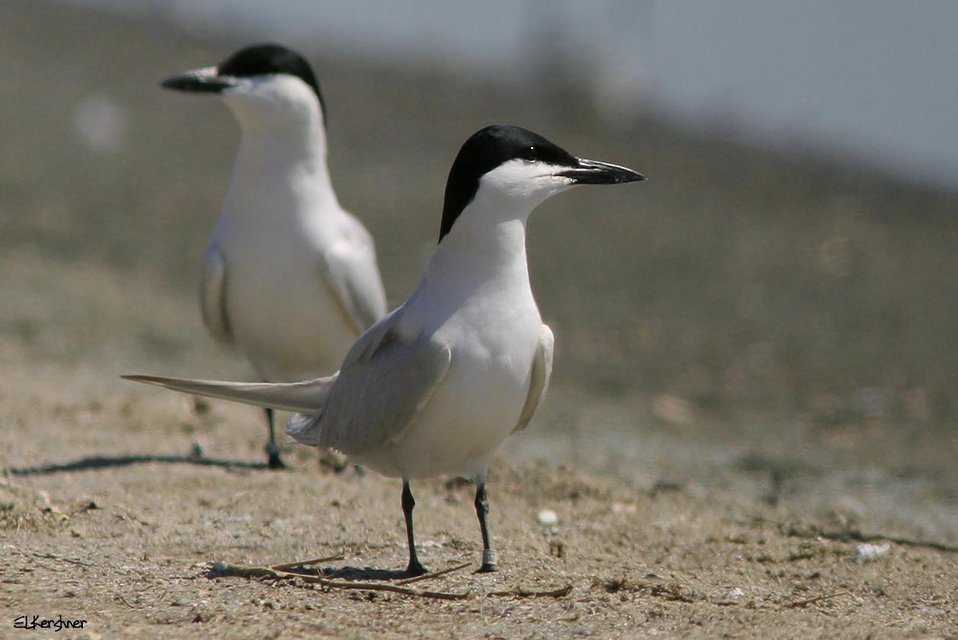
van Rossem's gull-billed tern

These van Rossem's gull-billed terns were photographed at the San Diego National Wildlife Refuge located in southern California.

They are a medium-sized migratory seabird that feed on a variety of small prey items, including crabs, lizards, insects, chicks of other bird species, and fish. They are also a ground-nesting species whose nests consist of shallow scrapes with pieces of rocks, shells, or fish bones.